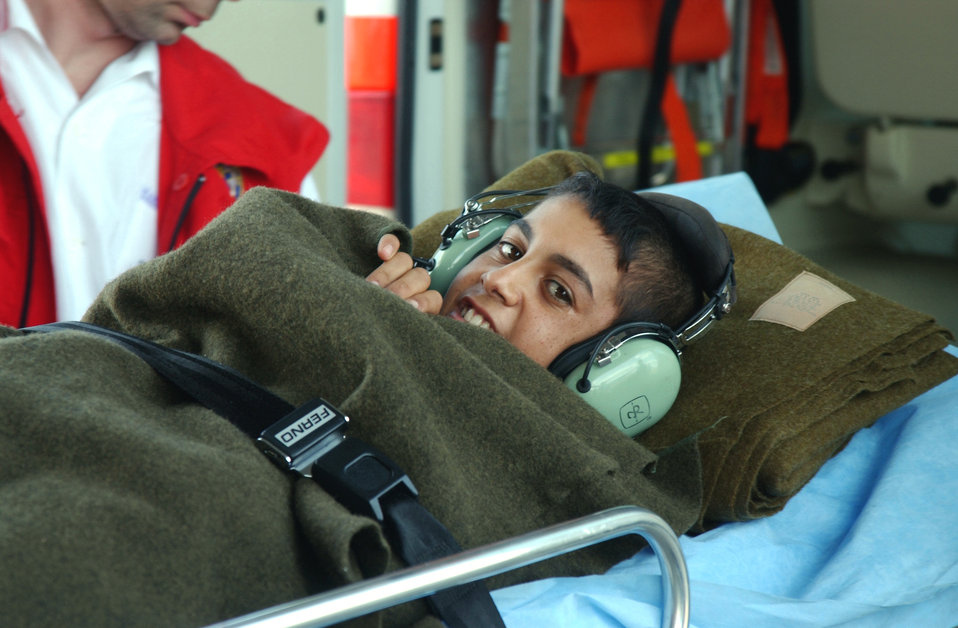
Airlift to Hungary

BUDAPEST, Hungary -- Abbas Jabbar, a 13-year-old Iraqi, gives a smile as he is moved into a Hungarian ambulance at the international airport here. A dozen crewmembers aboard a C-17 Globemaster III helped move him to Hungary after he was injured last month when he ran in front of a Hungarian convoy patrolling near Baghdad, Iraq.